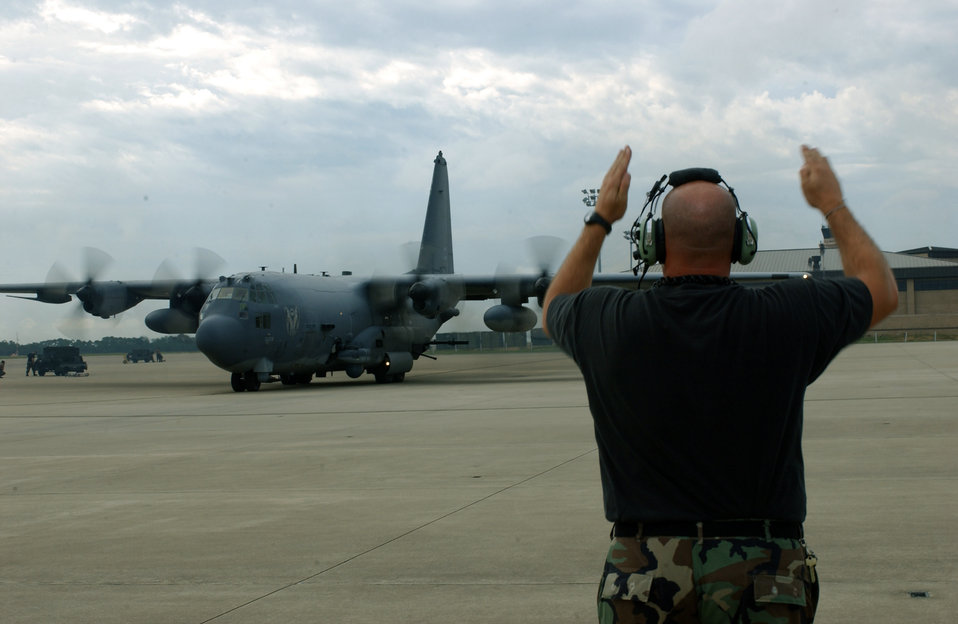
Bases, aircraft prepare for Hurricane Ivan

HURLBURT FIELD, Fla. -- Tech. Sgt. Paul McAllister marshals an AC-130U gunship Sept. 13. The plane was evacuating because of Hurricane Ivan.